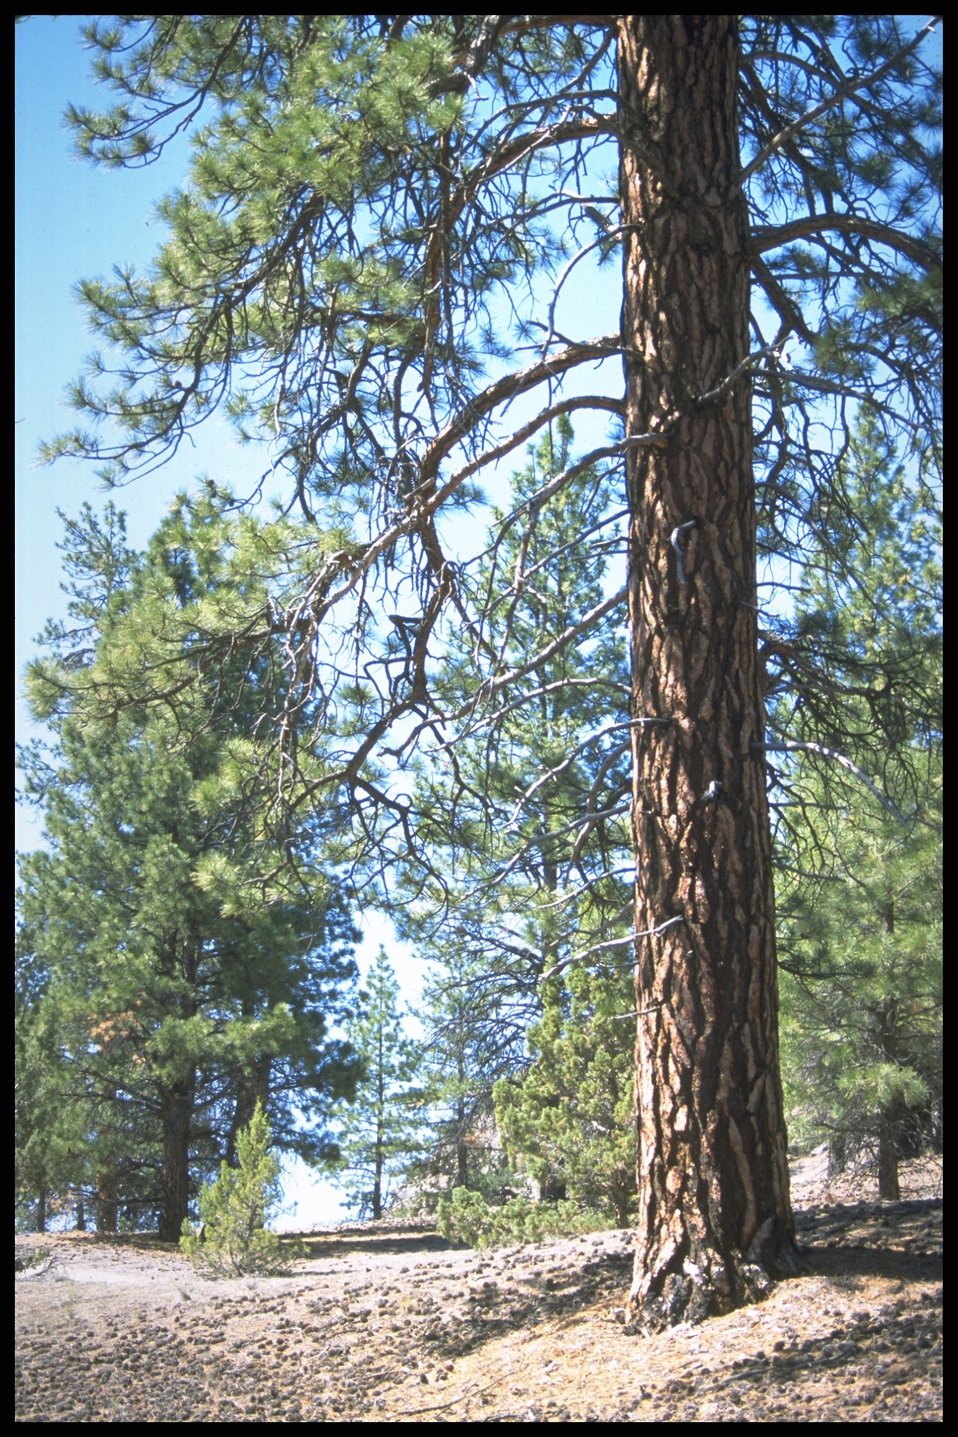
Scenic view of Lost Forest, Lakeview District.